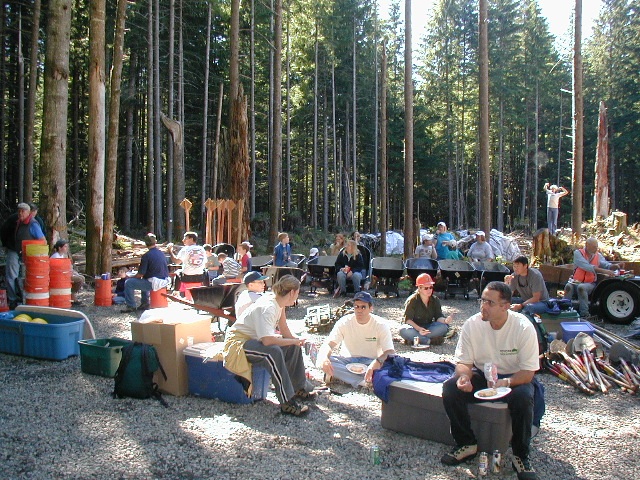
After 4 hours hard work, volunteers were treated to a hearty lunch supplied by Wolftree Inc.